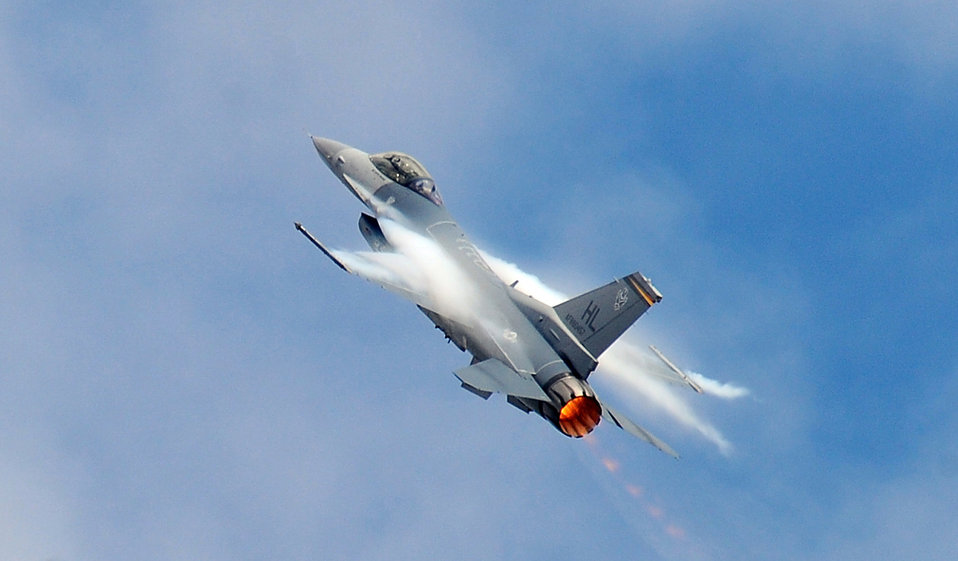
Showing off speed

An F-16 Fighting Falcon takes to the air at the Defenders of Freedom Open House and Air Show at Offutt Air Force Base Neb., Aug. 29, 2009. The F-16 is a compact, multi-role fighter that can locate targets in all weather conditions and detect low flying aircraft in radar ground clutter.